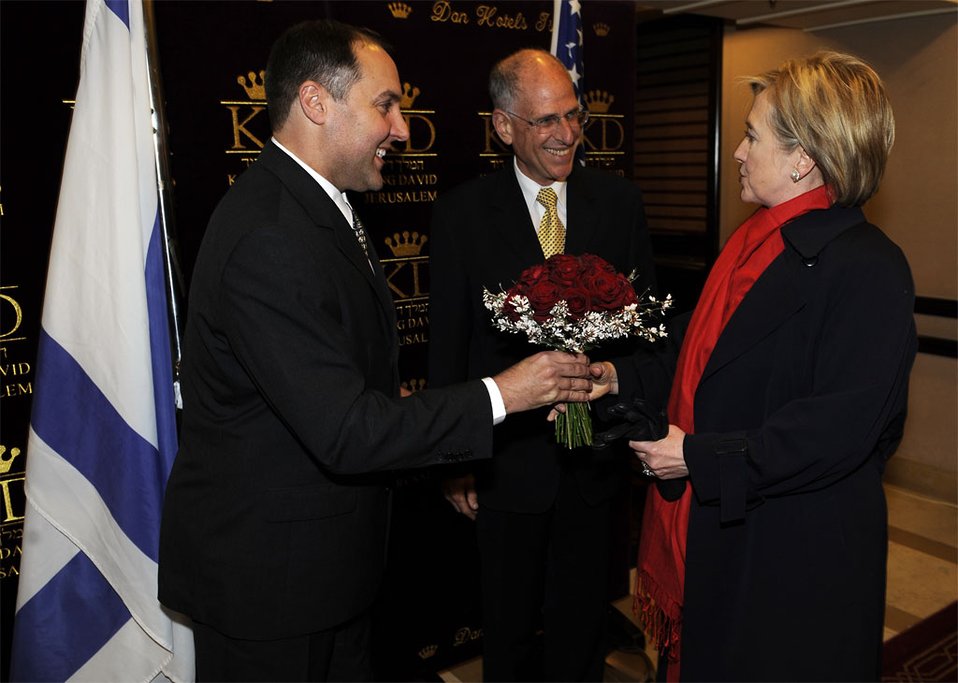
Secretary Clinton Arrives in Jerusalem

U.S. Secretary of State Hillary Rodham Clinton is welcomed upon her arrival to the King David Hotel by the General Manager, Haim Shkedi, and Sheldon Ritz, Deputy General Manager in Jerusalem March 2, 2009.